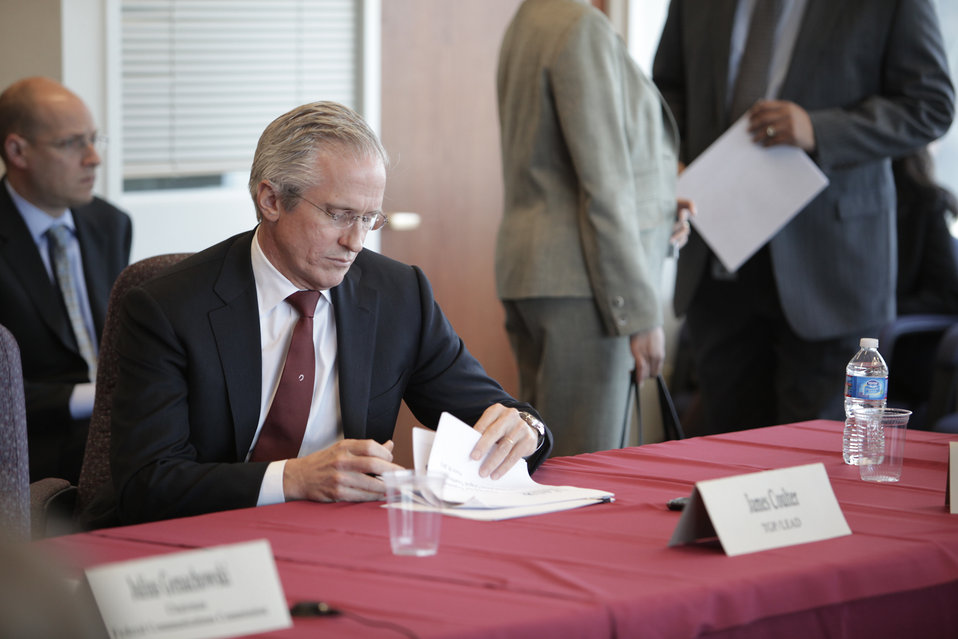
FCC Chairman Host Leaders From the Digital Education Ecosystem

Co-Chair, Leading Education by Advancing Digital (LEAD) Commission
James Coulter at the FCC Chairman's event at FCC's HQ in Washington, DC on March 29, 2012.